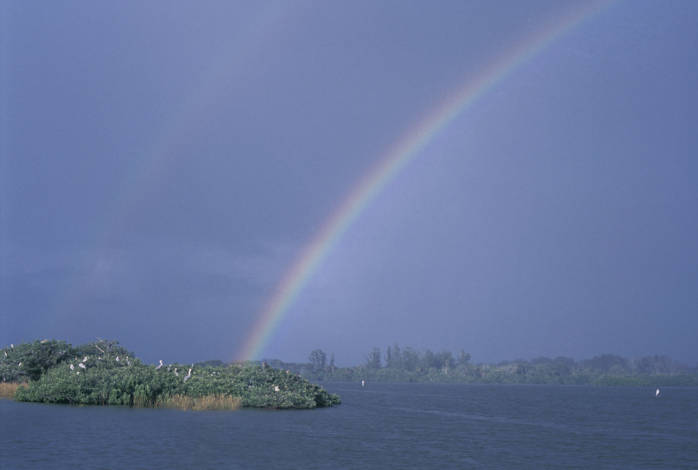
Rainbow over Pelican Island National Wildlife Refuge